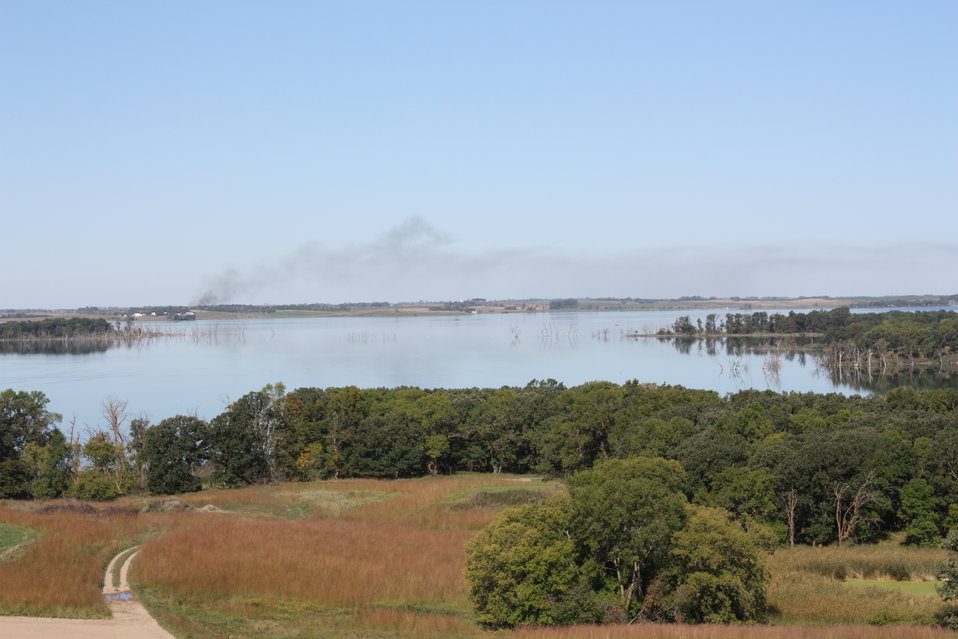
West View from the Tower

Looking west over Waubay National Wildlife Refuge from the tower. You can see restored native grass, bur oak woodlands, and Waubay Lake.